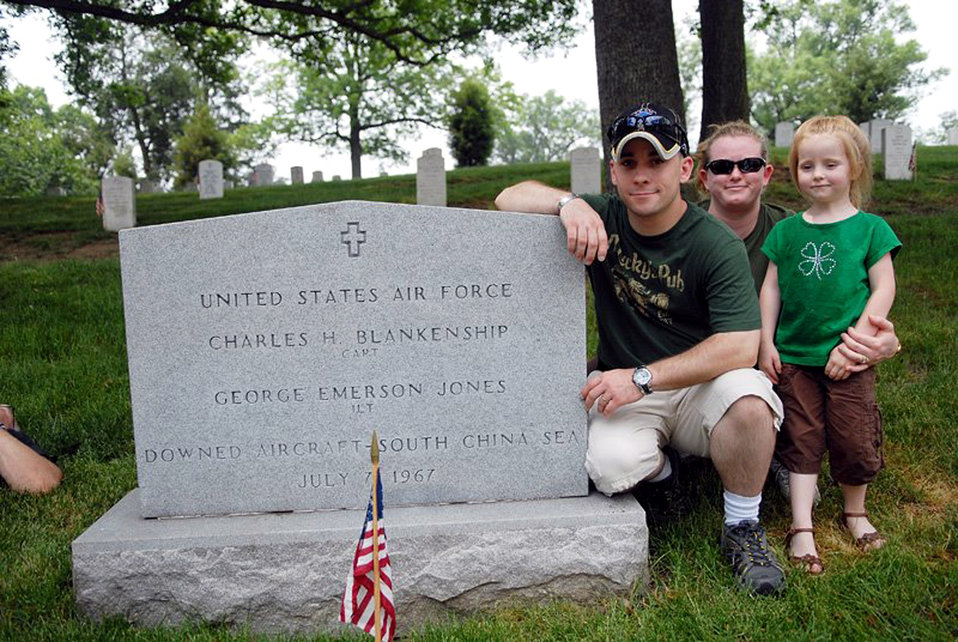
Remembering Lieutenant Jones: An Airman's search for a hero's family

Staff Sgt. Gary Ritter, along with wife, Kristina, and daughter, Cheyenne, visit the gravesite of 1st Lt. George Jones of Aberdeen, Miss., May 28 at Arlington National Cemetery. Sergeant Ritter made the journey to Arlington to meet with the family of Lieutenant Jones, and to give them the POW/MIA bracelet baring the Lieutenant's name that he had kept for 19 years. He gave the bracelet to the youngest daughter of Lieutenant Jones on Memorial Day in honor of his memory. Sergeant Ritter is a combat arms instructor at the Expeditionary Center at Fort Dix, N.J.